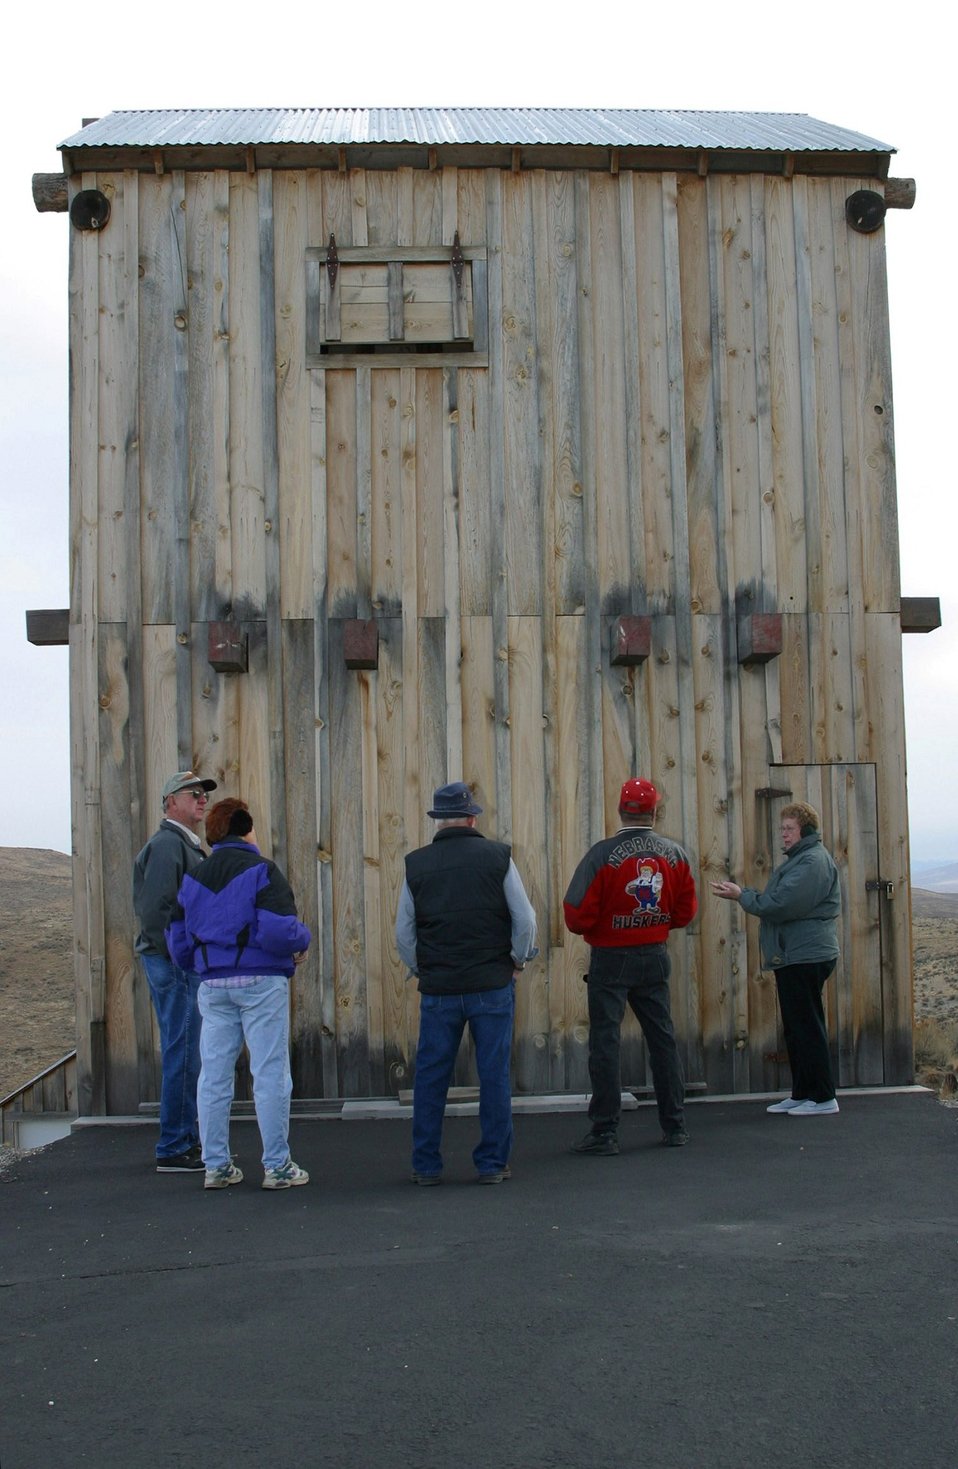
A replica of the Rabbit Mine 1926 stamp mill near Greenhorn in the Blue Mountains of eastern Oregon. It is used to interpret the importance of mining in western history, and the relationship of gold mining to the westward migration story.